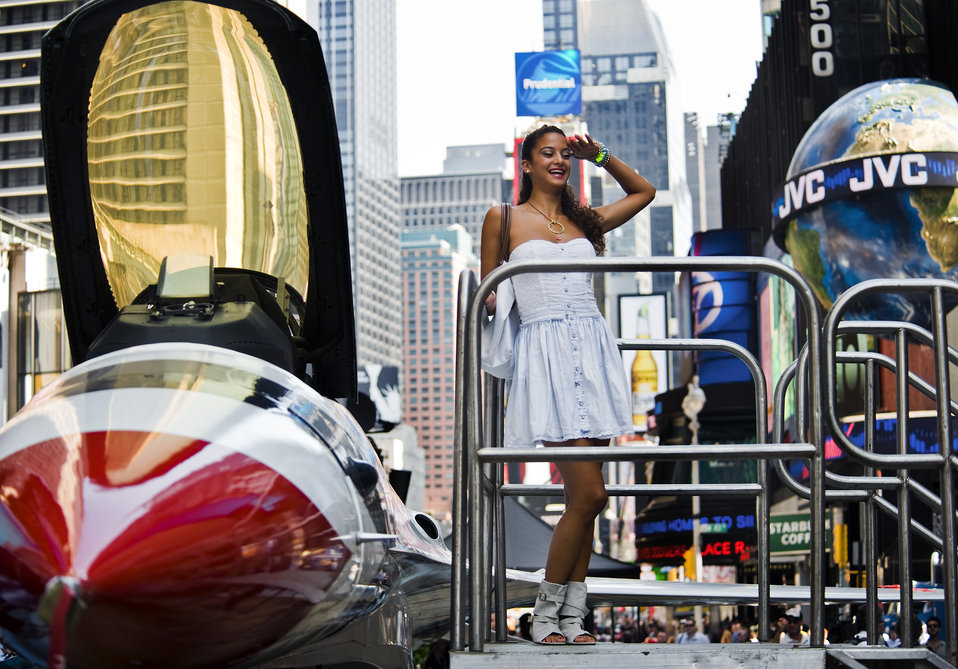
Air Force Week New York

Dorin Danel of Israel poses in front of an F-16 Fighting Falcon static display Aug. 26, 2010, in New York's Times Square. The F-16 is one of many exhibits on display during Air Force Week New York City, which will also showcase flyovers, band concerts and more throughout the city's five boroughs.